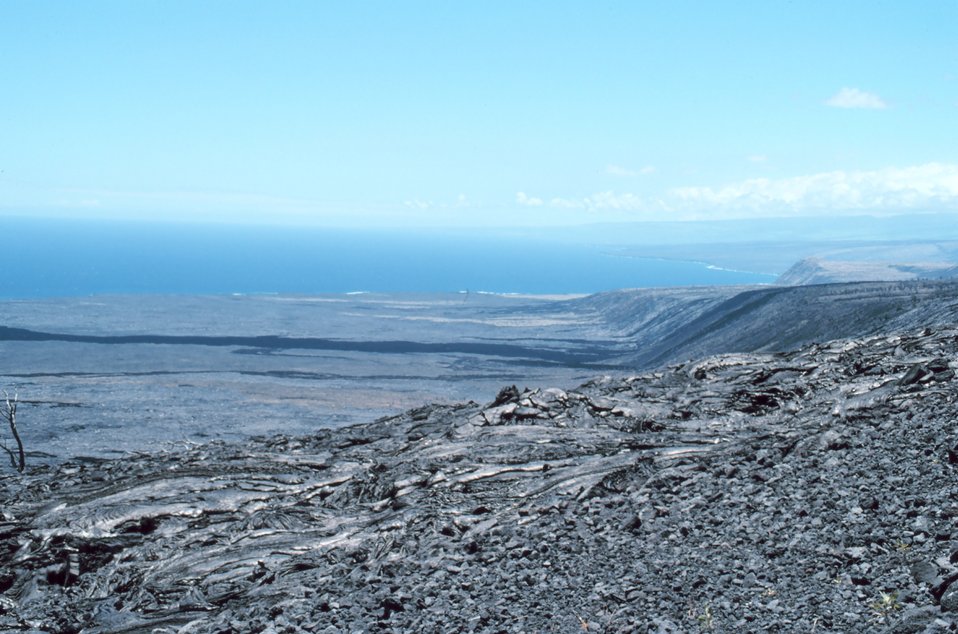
Kilauea lava flows that extend to the sea - relatively new land at this location